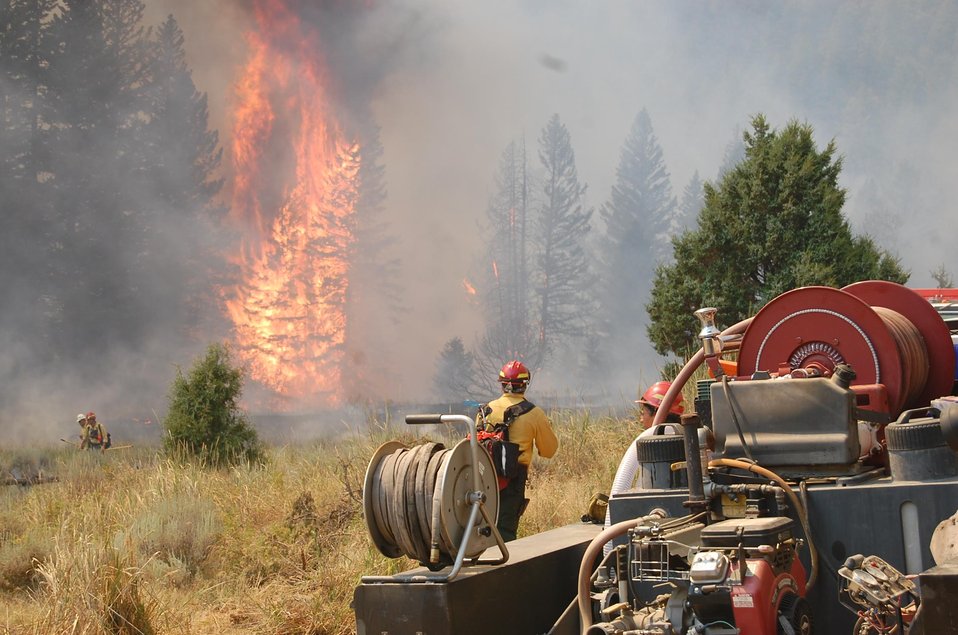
Firefighters work to control the Miner Paradise Complex Fire. The Miner Paradise Complex Fire in the Gallatin National Forest consists of three fires near Livingston, Gardiner, and Gallatin, MT began on Aug. 16, 2013 by lightning and has consumed approximately 11,658 acres and is 15% contained.